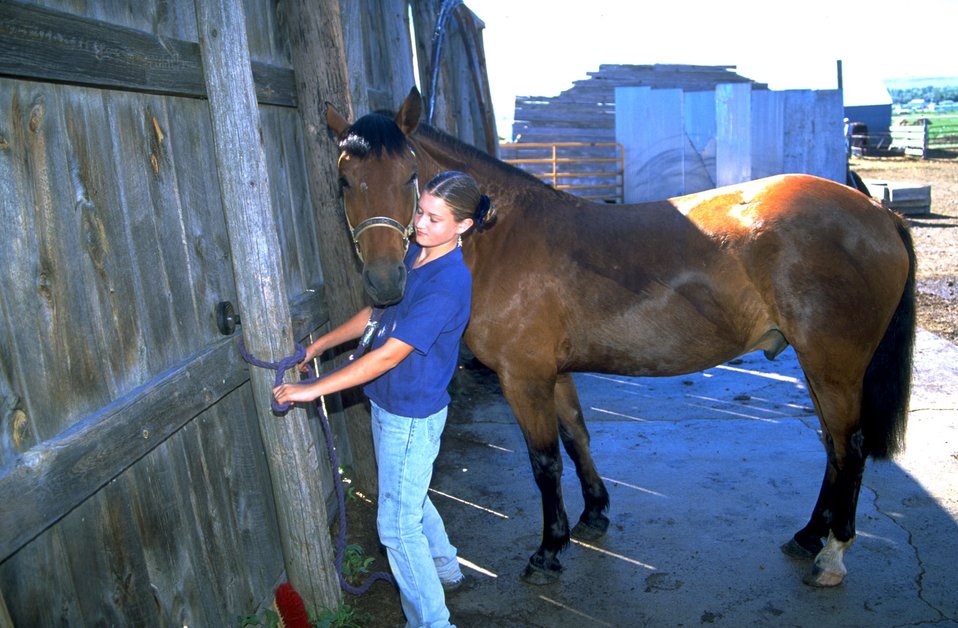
Adopted Horse, tied